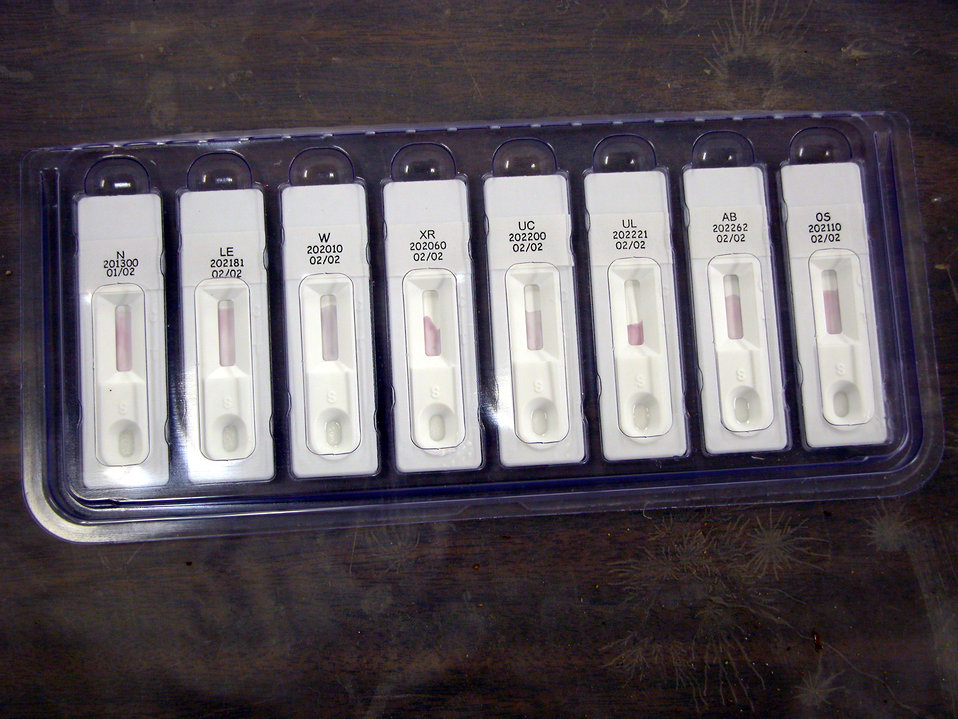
Checking for NBC

TALLIL AIR BASE, Iraq -- A biological detection kit is used to identify a training agent against the top eight biological threats in the region. Two pink lines would indicate a positive identification, one a negative. The test takes about 15 minutes.